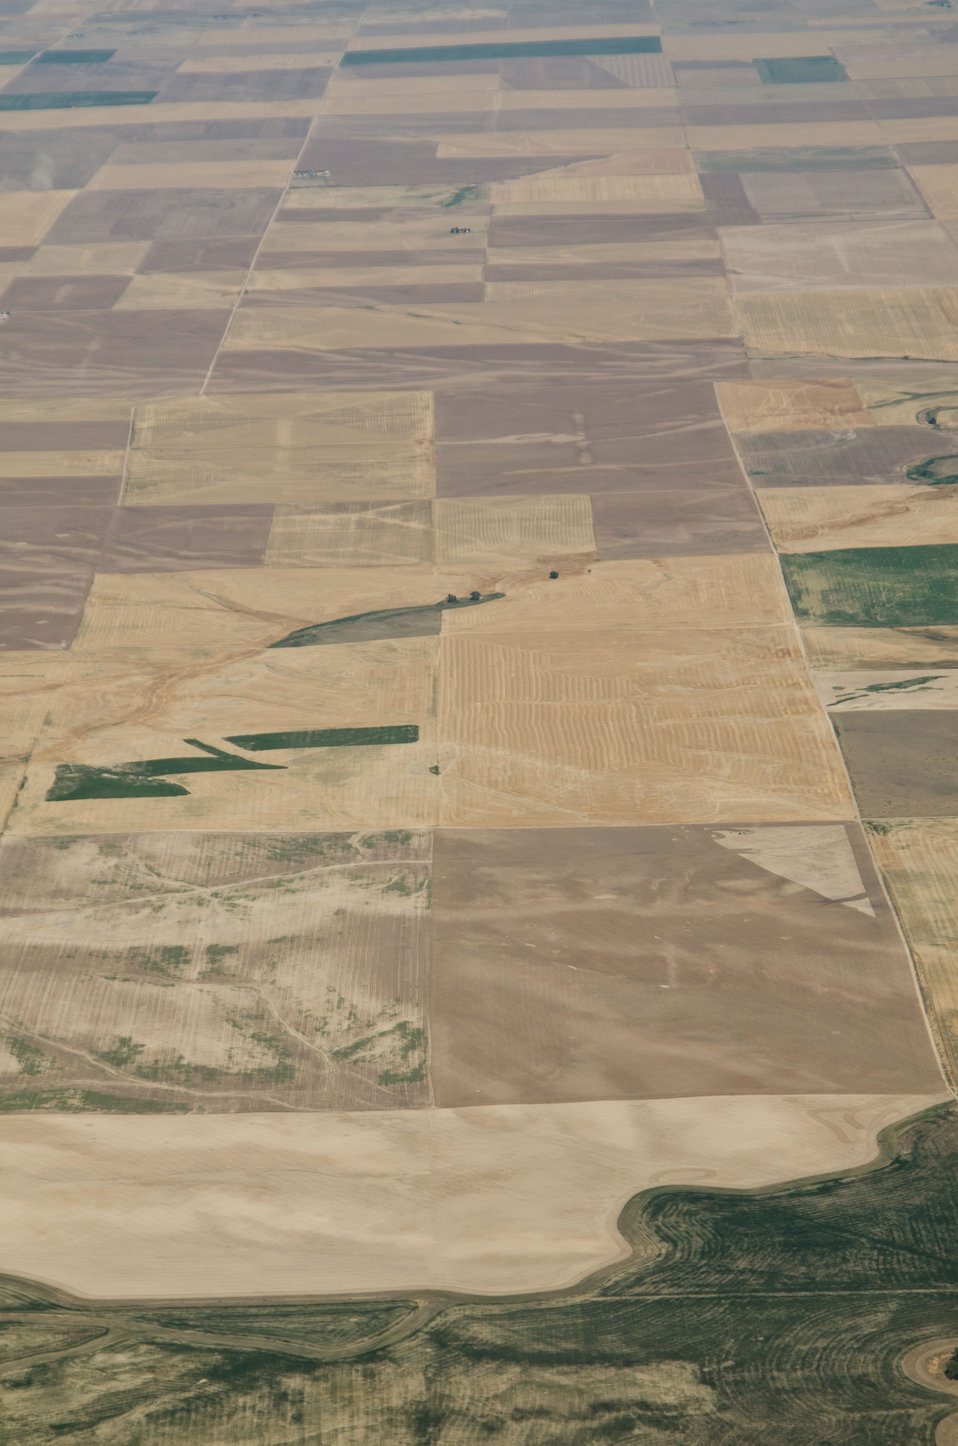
Aerial views of drought affected Colorado dryland crops near Byers, Colorado, on Saturday, July 21, 2012. Green areas are irrigated.